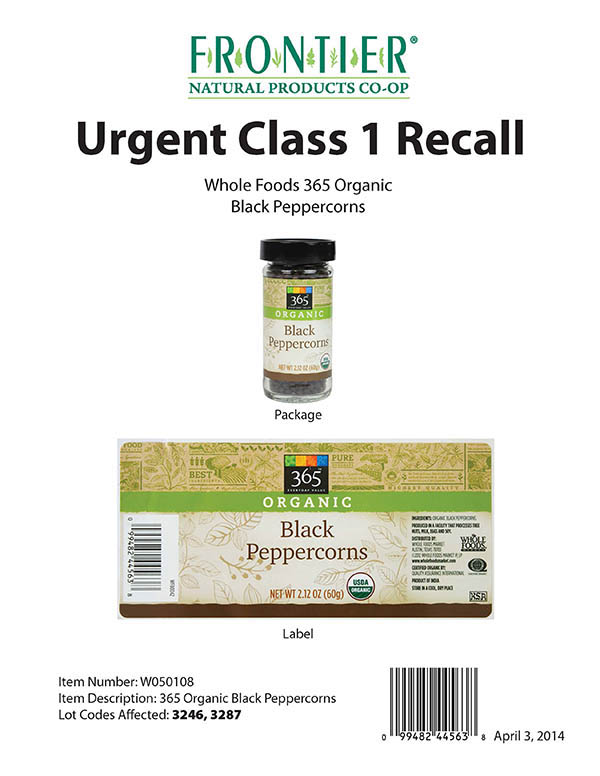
RECALLED – Organic Black Peppercorns

April 4, 2014 – Product Recall – Frontier Natural Products Co-op Initiates Voluntary Class 1 Recall Due to Possible Health Risk from Organic Black Peppercorns.